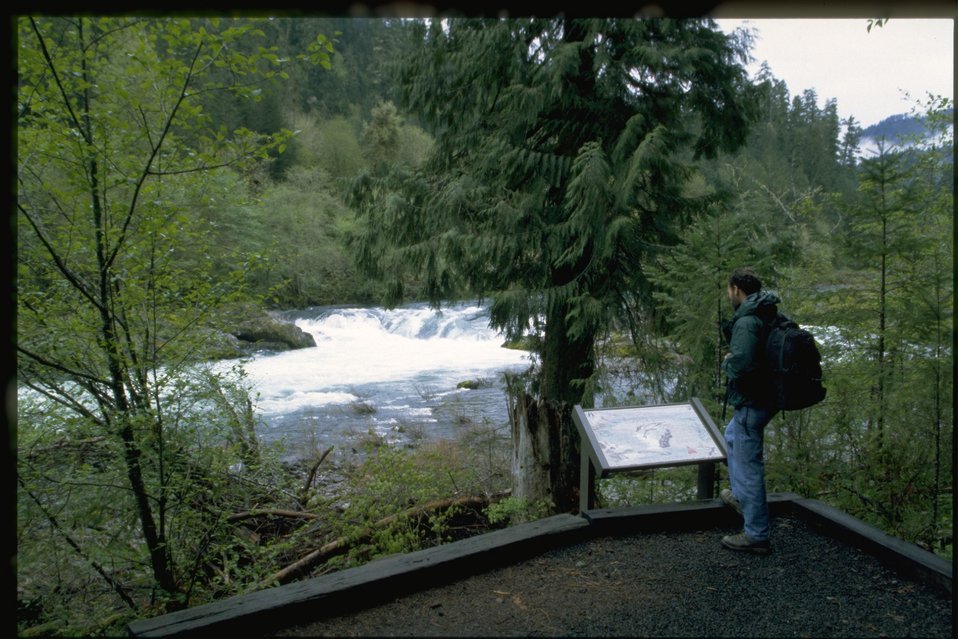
Interpretative sign along Swiftwater recreation trail.